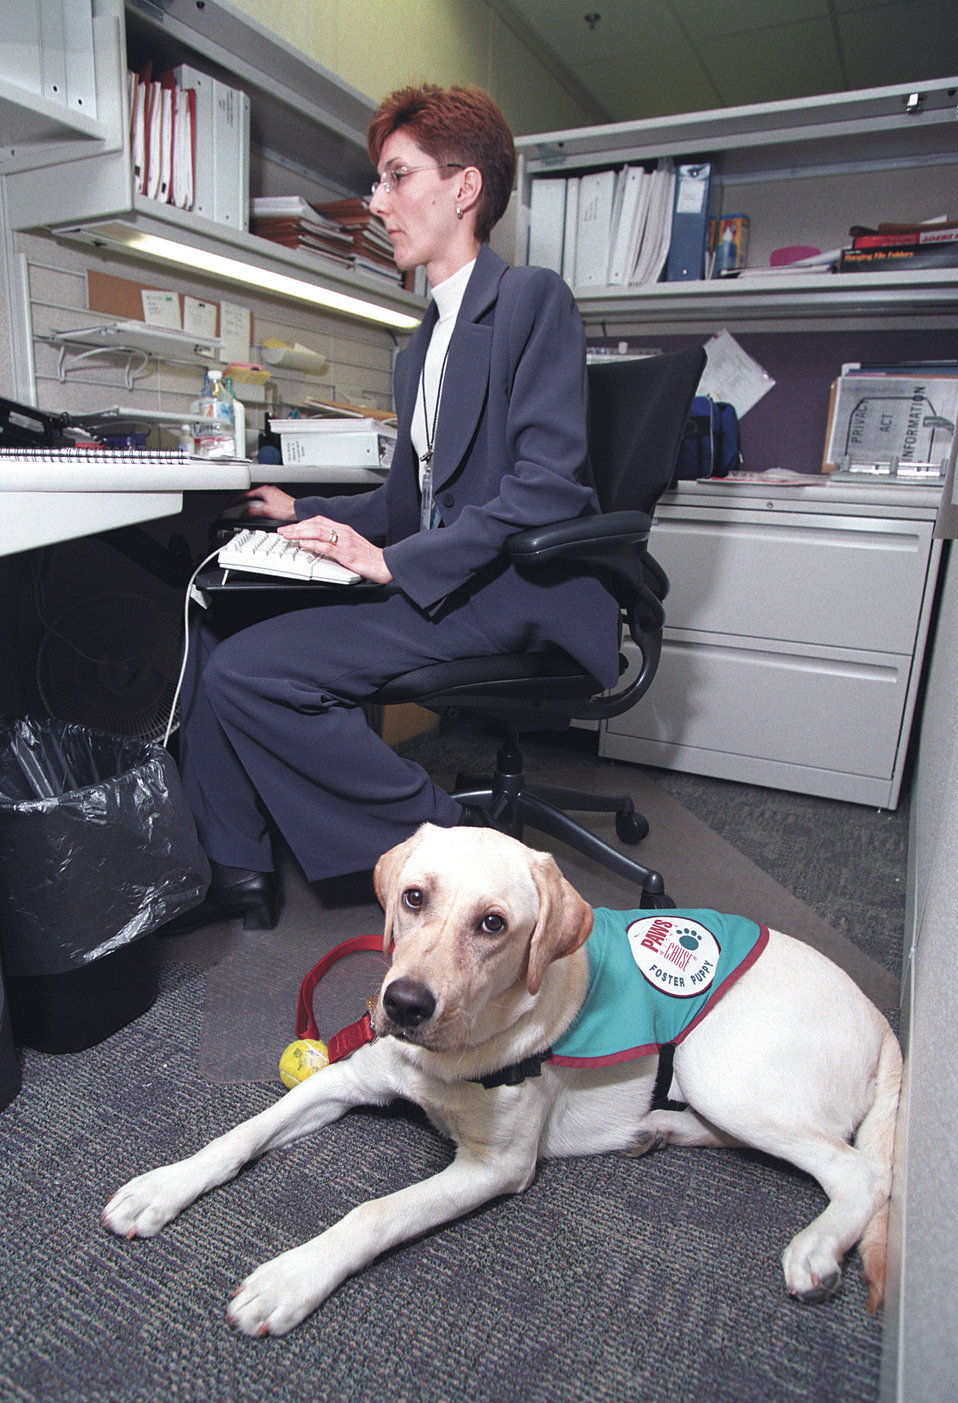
Puppy-raisers

TINKER AIR FORCE BASE, Okla. -- Dottie learns the basics of a service dog's responsibilities at the feet of Stephanie Edquid. Edquid and her husband, Ray, are volunteer puppy-raisers for Paws With A Cause, a service dog organization and Combined Federal Campaign agency. Edquid is an E4-B program manager at the Oklahoma City Air Logistics Center here.